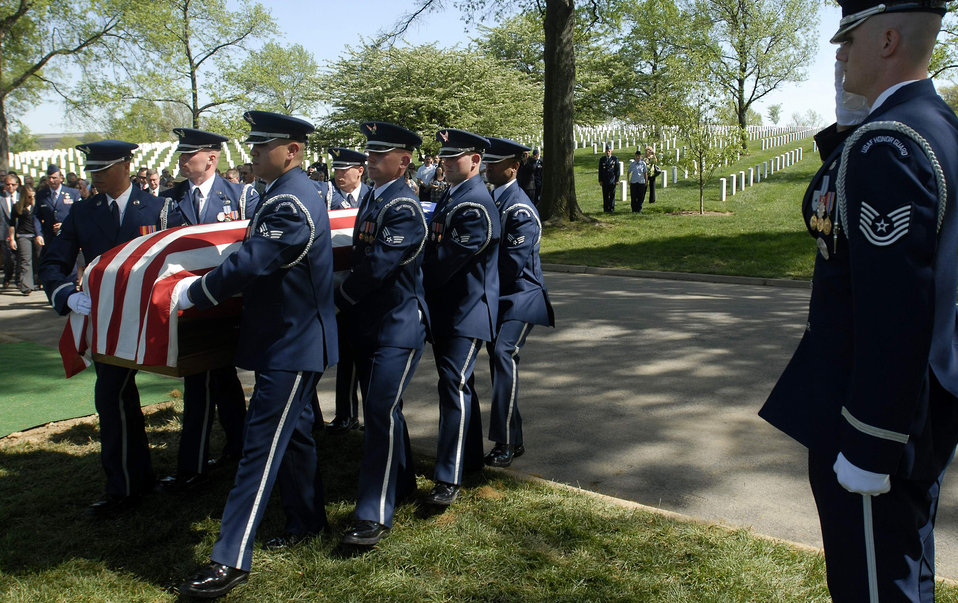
A fallen hero is laid to rest

U.S. Air Force Honor Guard Airmen carry the remains of Tech. Sgt. Phillip A. Myers during his funeral April 27 at Arlington National Cemetery. Sergeant Myers, from Hopewell, Va., was killed April 4 in Afghanistan by an improvised explosive device. His family was the first to allow media coverage of the dignified transfer of remains at Dover Air Force Base, Del., since Defense Secretary Robert Gates lifted the 1991 ban April 6.